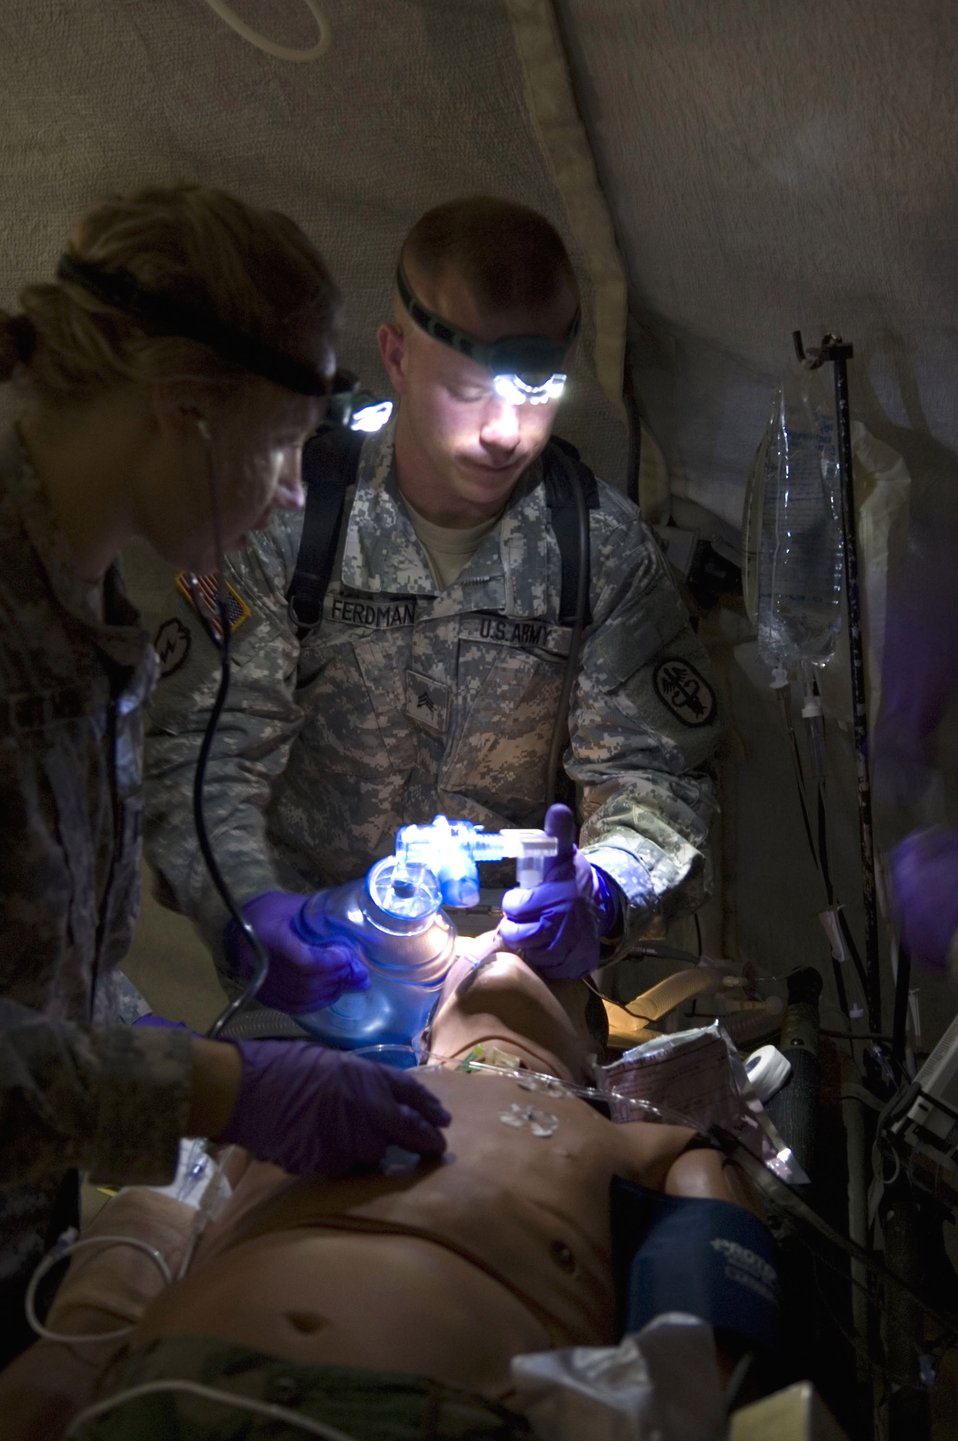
Air Force provides Army burn flight team with training

Army Sgt. Ryan Ferdman helps a simulated patient breathe during critical care air transport team training conducted by the Air Force School of Aerospace Medicine at Brooks City-Base, Texas. The course prepares CCATT members for medical evacuation operations and duties. Sergeant Ferdman is a respiratory therapist with the Pacific Air Forces CCATT at Tripler Army Medical Center in Hawaii.